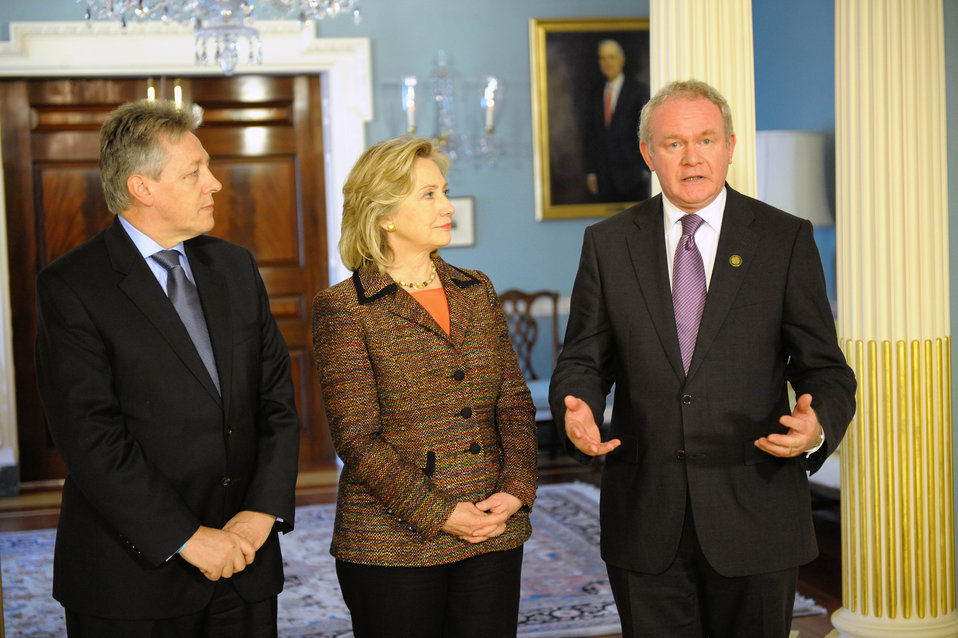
Secretary Clinton Speaks With First Minister Robinson and Deputy First Minister McGuinness of Northern Ireland

U.S. Secretary of State Hillary Rodham Clinton speaks with First Minister Peter Robinson and Deputy First Minister Martin McGuinness of Northern Ireland, at the U.S. Department of State in Washington, D.C., on March 18, 2011.